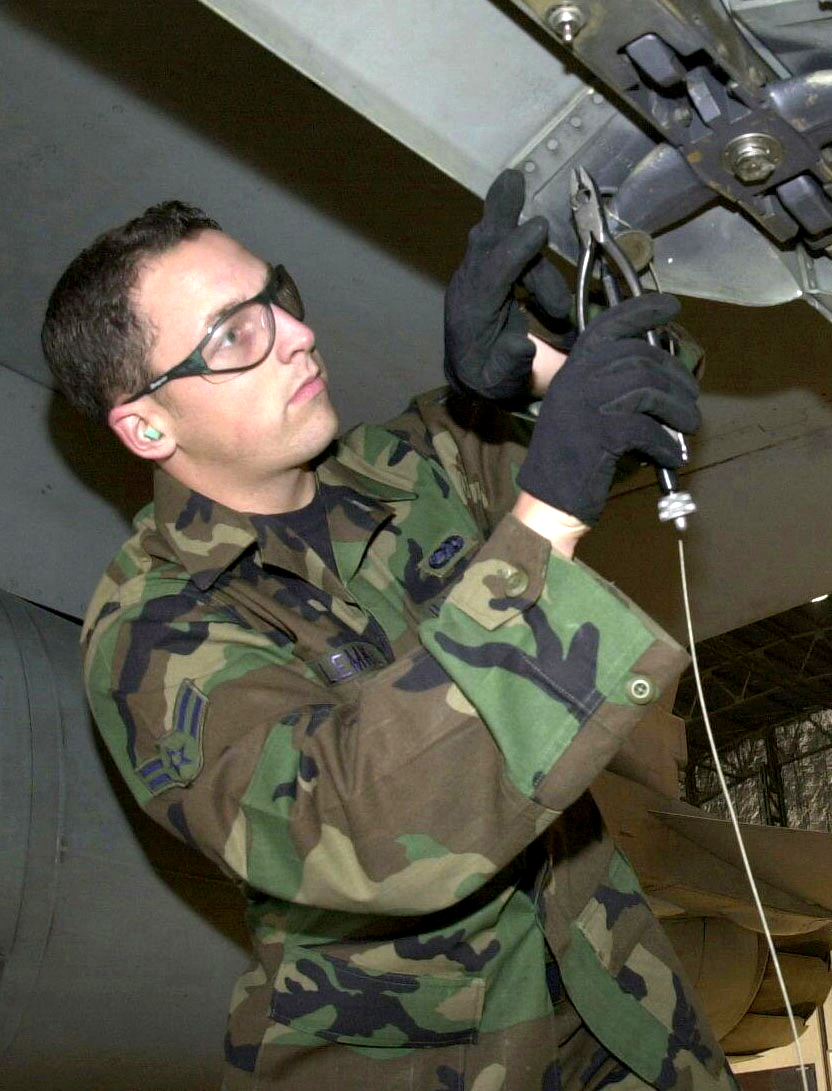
Load crew competition

OSAN AIR BASE, South Korea -- Airman 1st Class Jason Lemke secures a guided bomb unit-12 onto an F-16 Fighting Falcon during a load crew competition here Nov. 11.